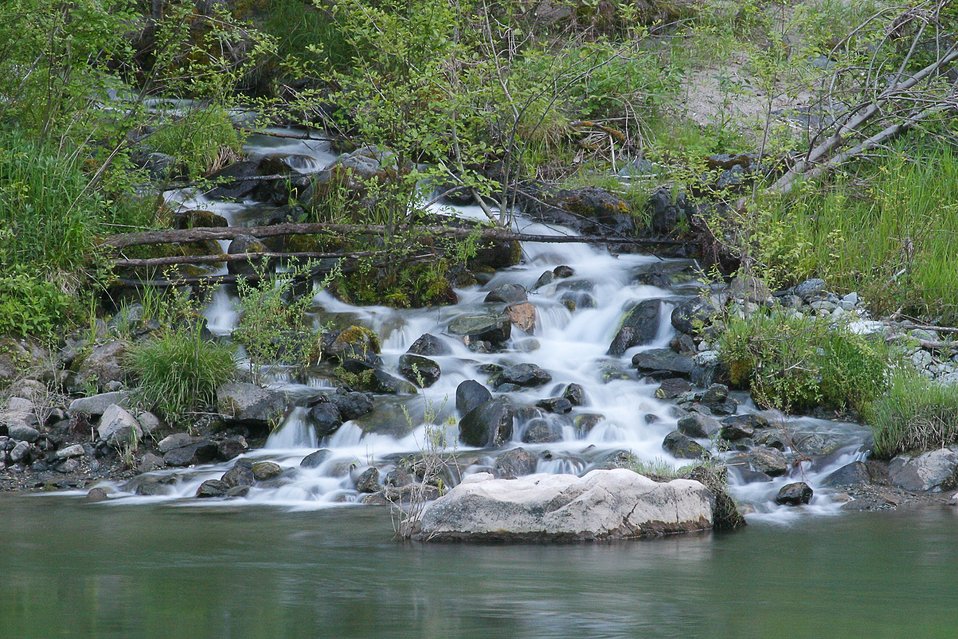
Wild section of the Rogue River from Grave Creek to Foster Bar. 3100 cfs at Grants Pass and 5300 at Agness.